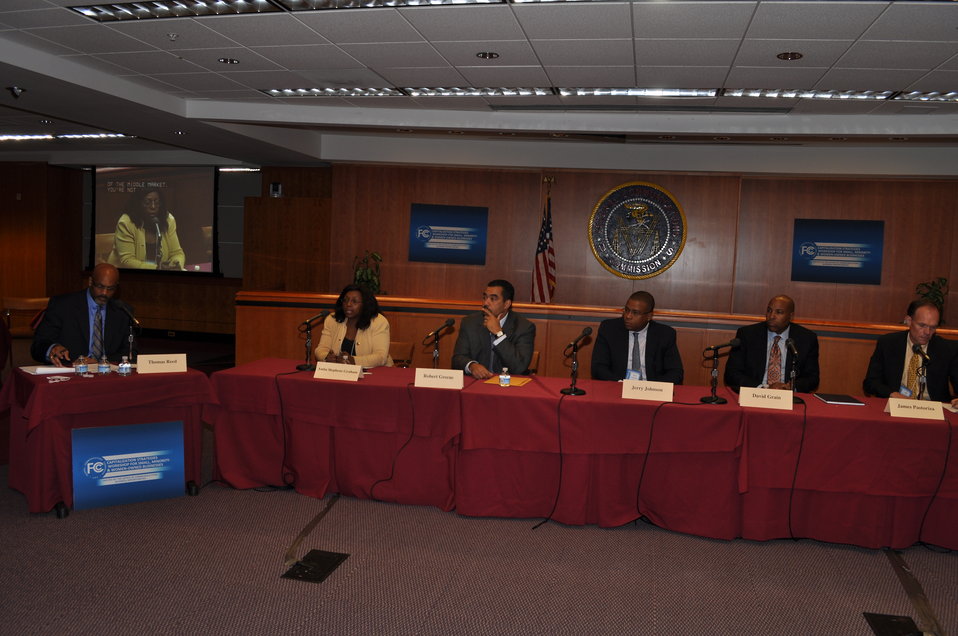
Capitalization Strategies

Workshop for small, minority and women owned businesses. Hosted by the Office of Communications Business Opportunities